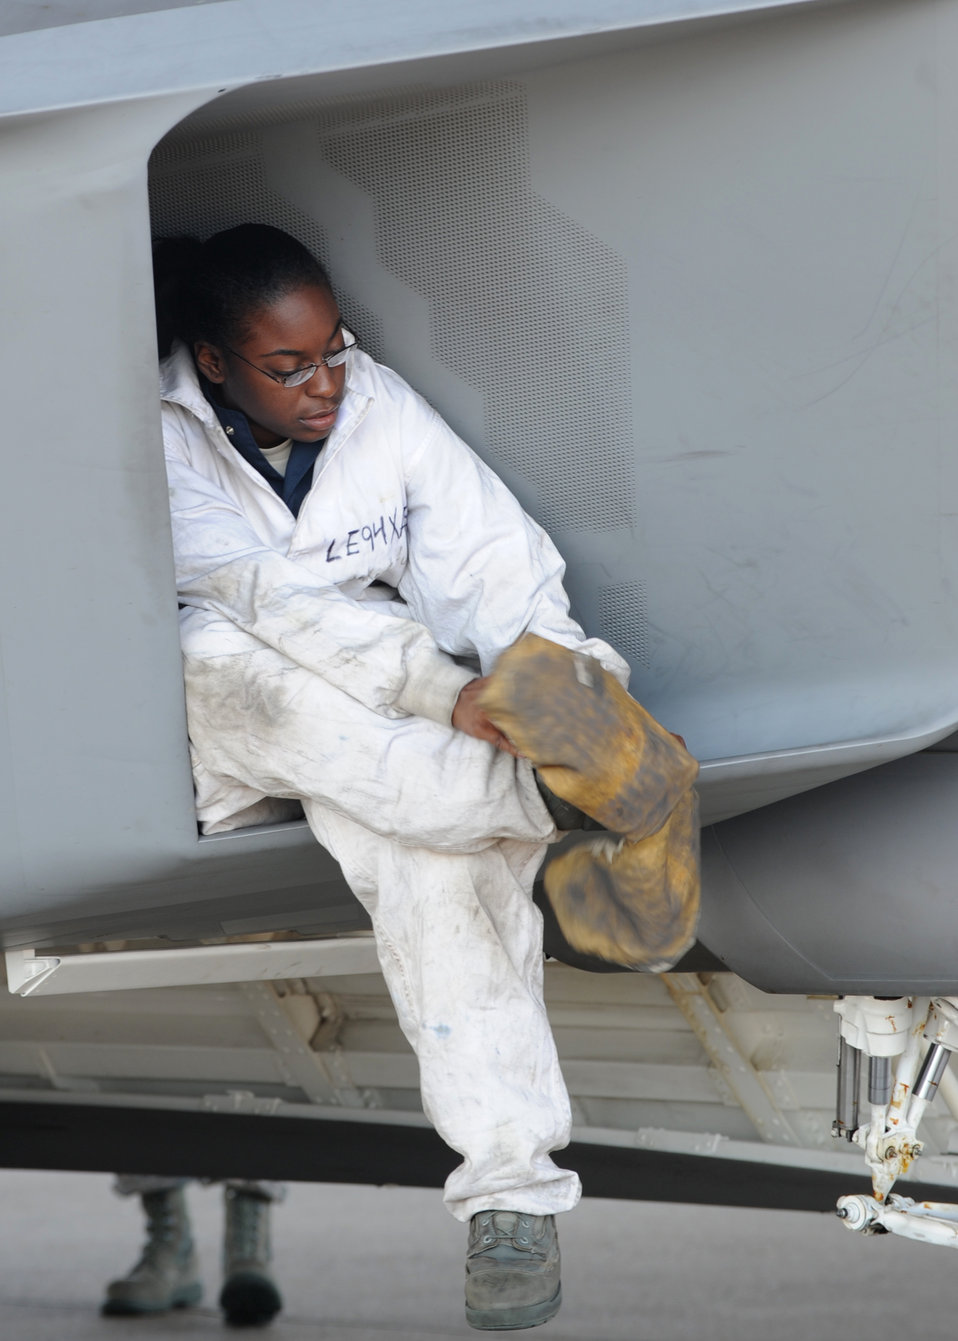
Pulling oil on the flightline

Senior Airman Kimara Duncan, 94th Aircraft Maintenance Unit tactile aircraft maintainer, slides booties over her boots during routine maintenance on an F-22 Raptor at Langley Air Force Base, Va., Sept. 25, 2012. Duncan, like most crew chiefs, often works 10- to 12-hour shifts.